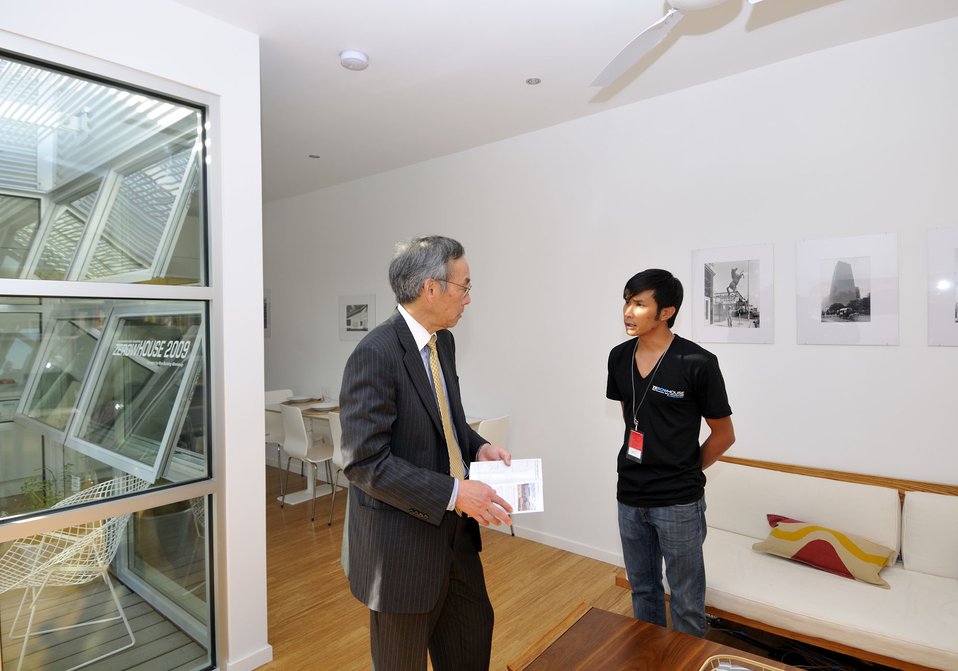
Solar Decathlon 2009 on the National Mall, with Sec. Chu

Solar Decathlon 09